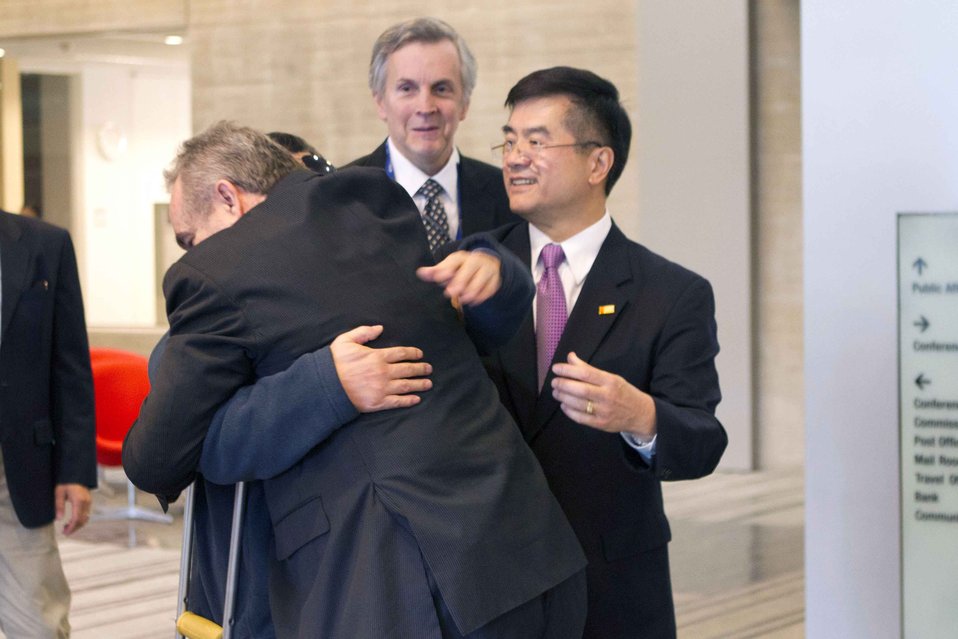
Assistant Secretary Campbell With Chen Guangcheng

Assistant Secretary of State for East Asian and Pacific Affairs Kurt Campbell embraces Chen Guangcheng at the U.S. Embassy in Beijing, China, on May 1, 2012. U.S. Ambassador to China Gary Locke is also pictured.